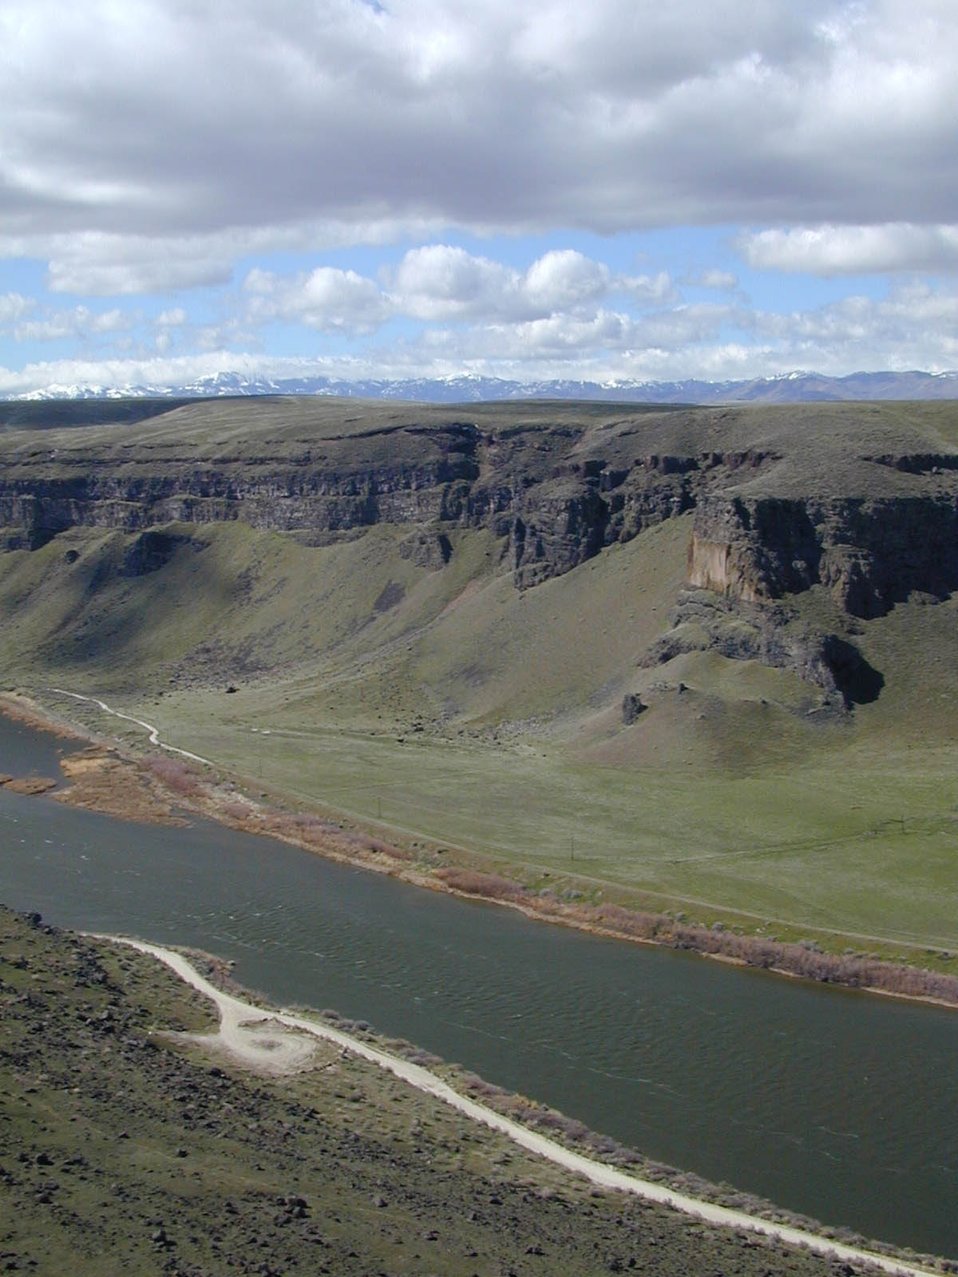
Lower Snake River District Snake River Birds of Prey National Conservation Area Snake River Scenic